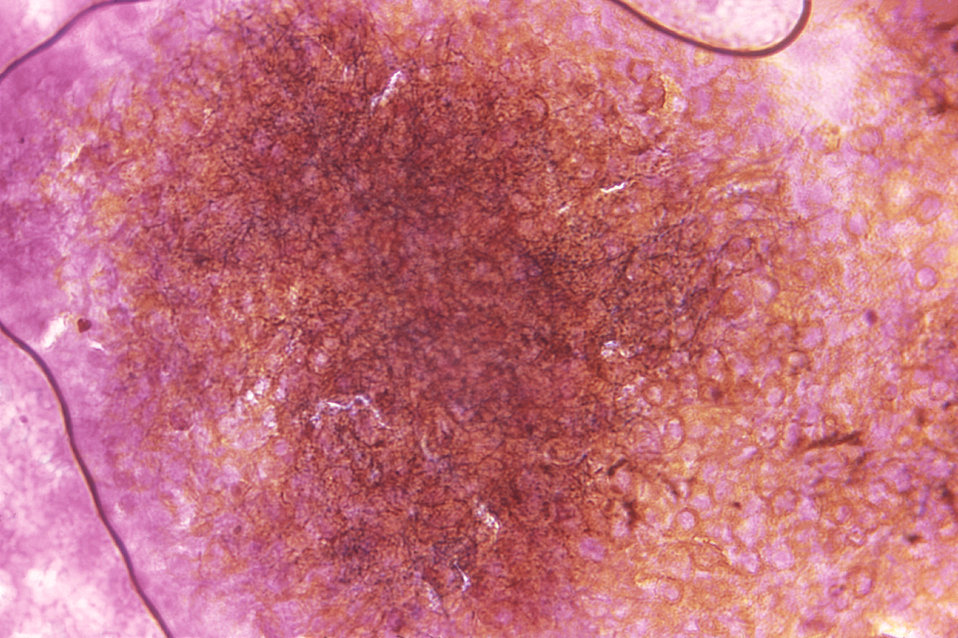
Magnified 400X, this Gram-stained photomicrograph revealed some of the histopathologic changes observed in a purulent exudate taken from a skin lesion determined to be due to the presence of Nocardia brasiliensis bacteria.